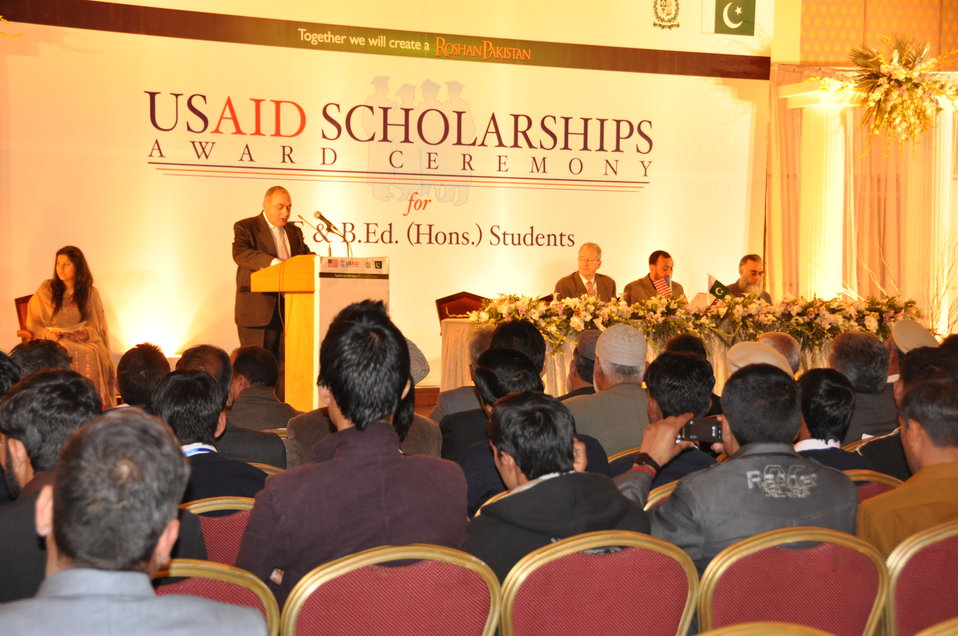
Chief Secretary AJK addressing the particpants